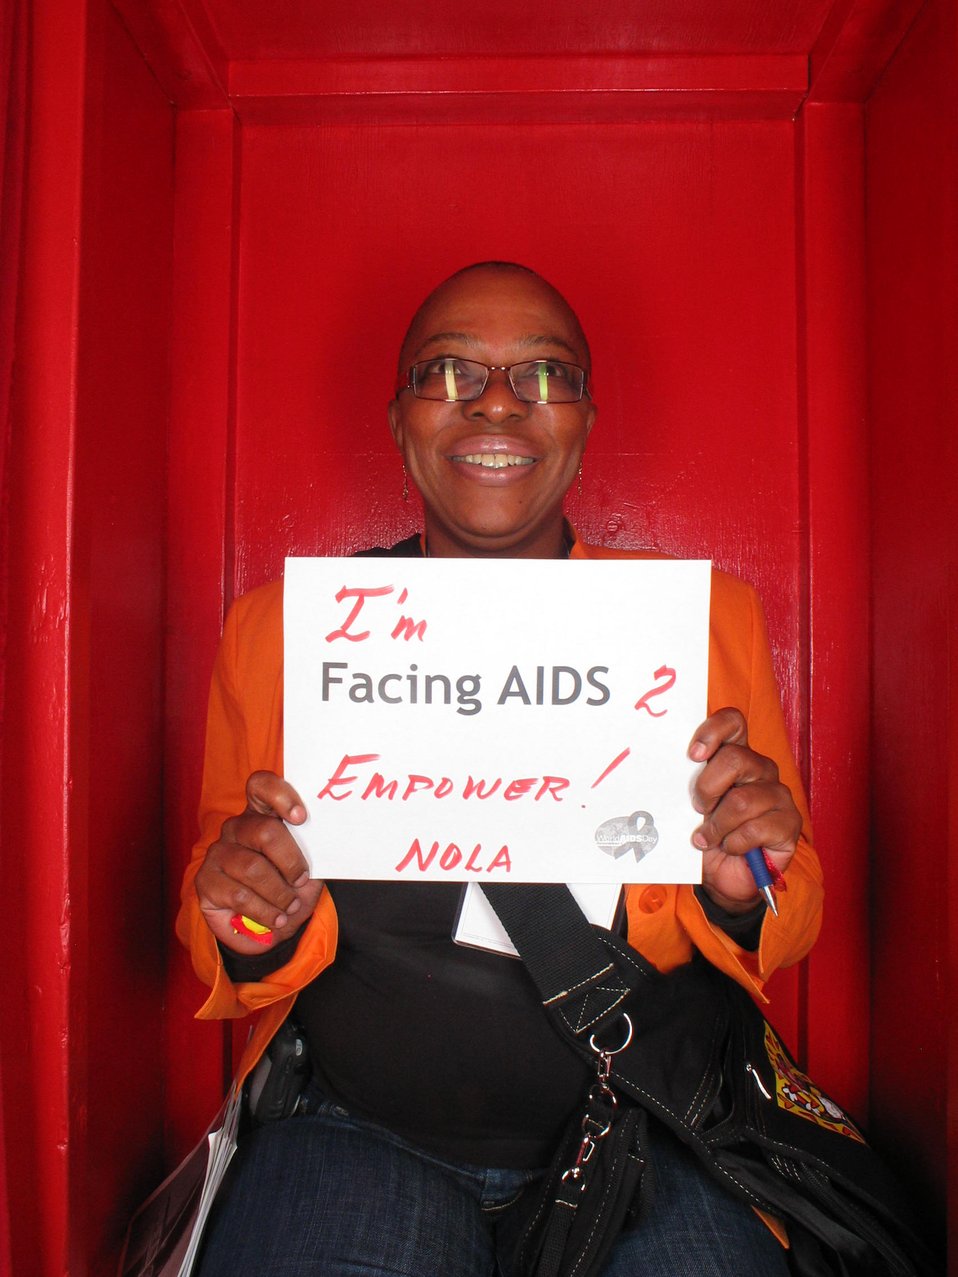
I'm Facing AIDS 2 empower!